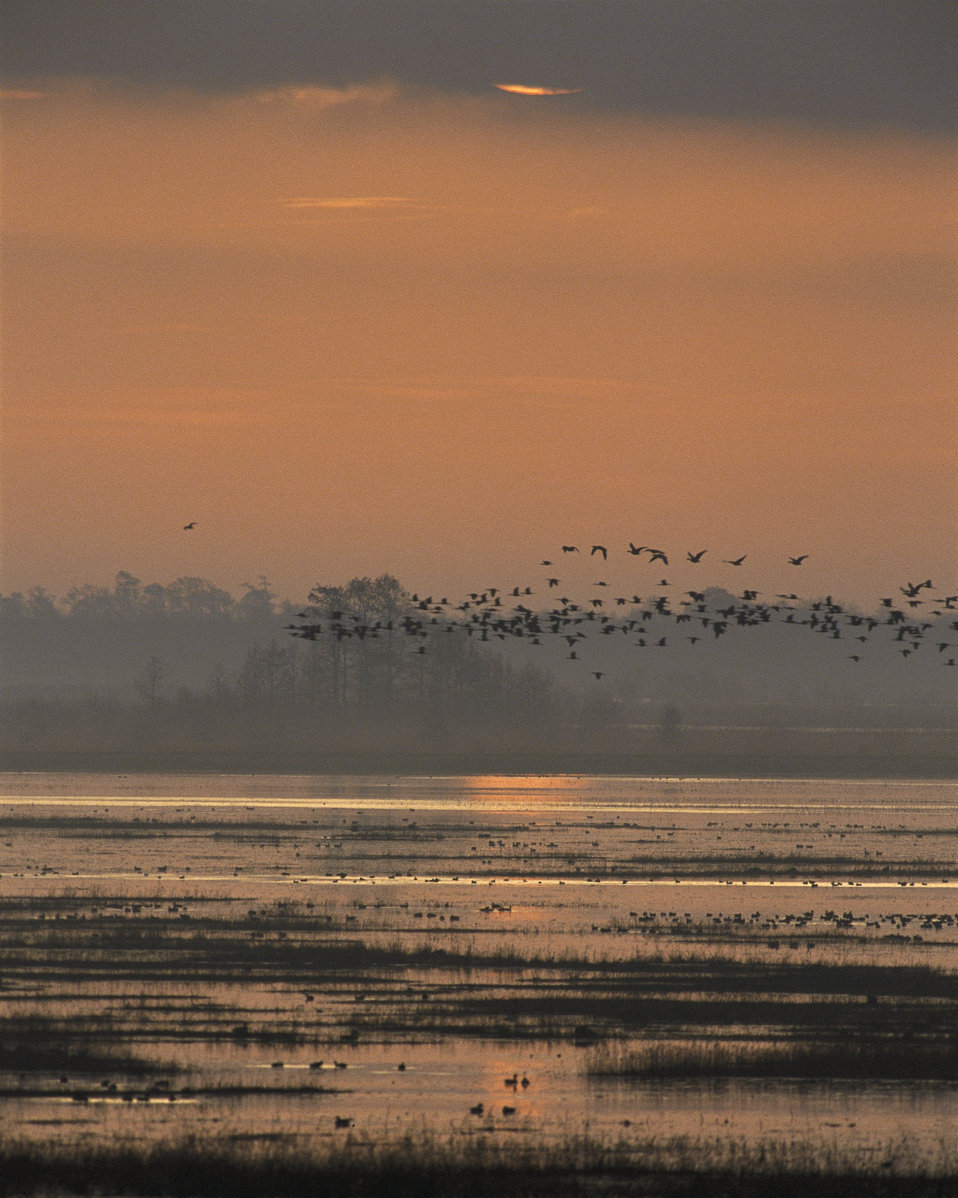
sunset on the marsh

Lacassine National Wildlife Refuge, LA